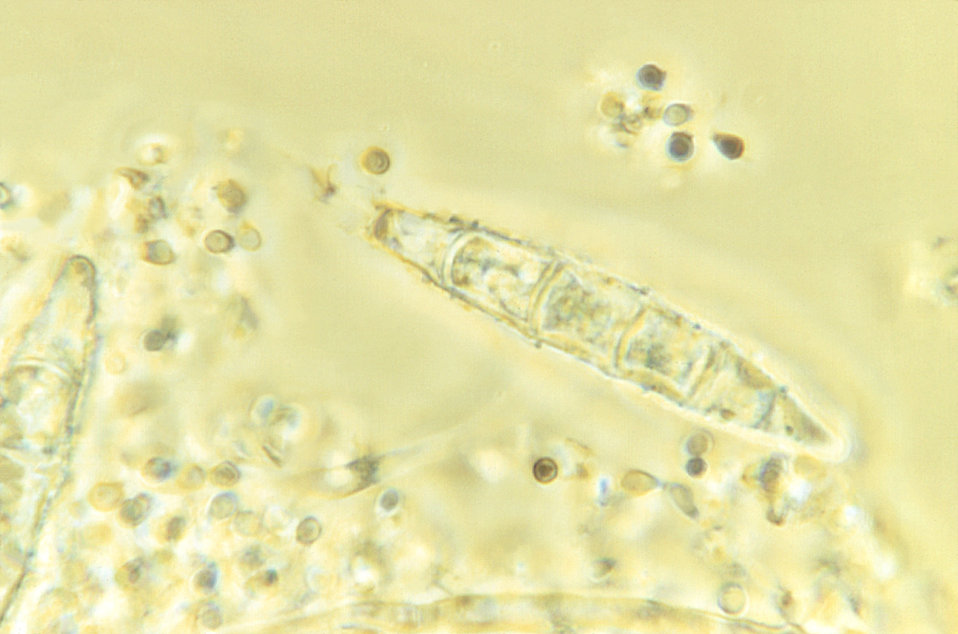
Characterized as 'echinulate', or spiny, this photomicrograph depicted a number of Microsporum persicolor fungal macroconidia. Under this relatively-high magnification of 1125X, the ultrastructural morphology exhibited by these elongated, roughened spore clusters can be observed.